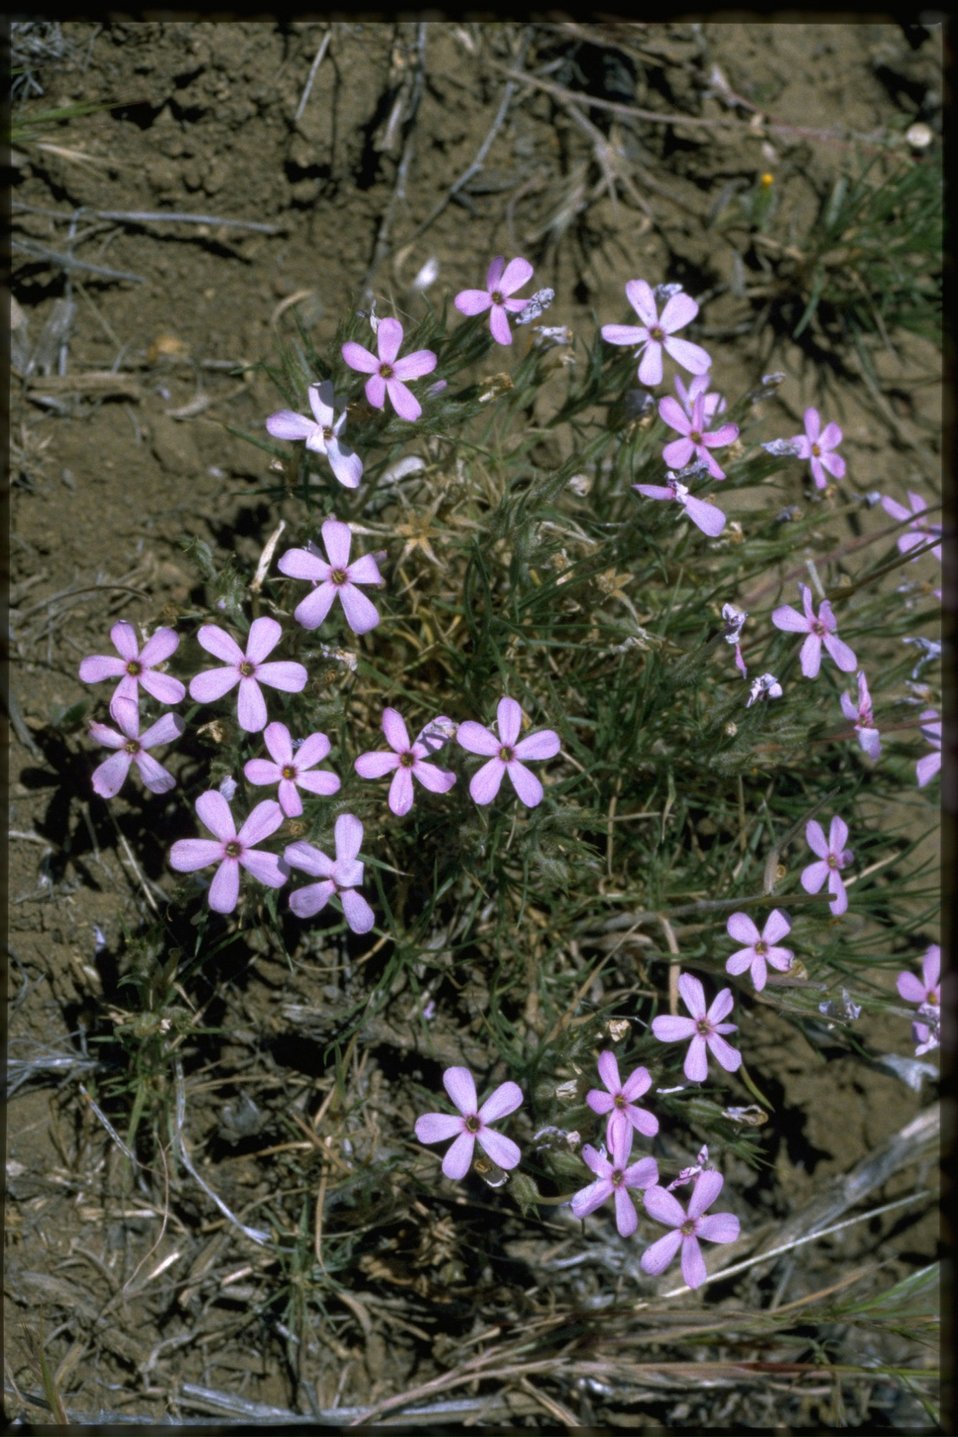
Medium shot of Phlox.